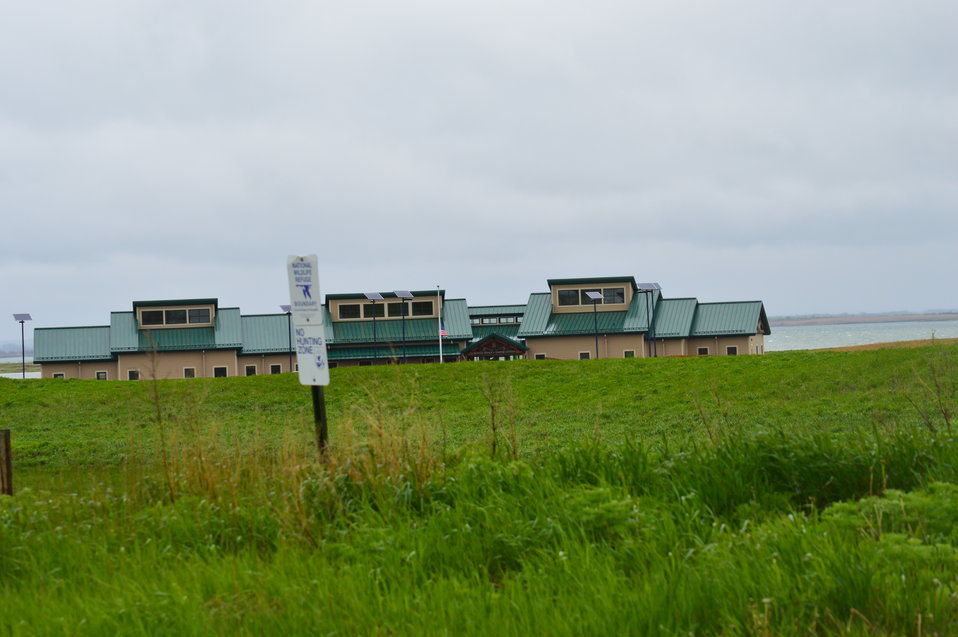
Audubon NWR Visitor Center and Offices

Audubon NWR Visitor's Center and office building has an exhibit hall featuring wetlands and grassland habitat, migratory birds, refuge history and more. Also in the building are USFWS offices and a store.